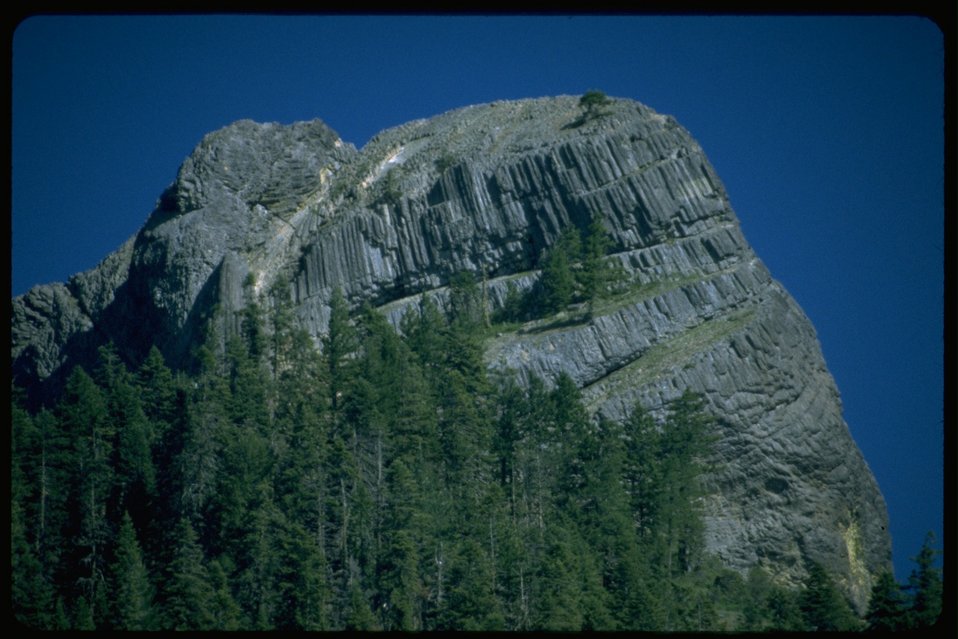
Pilot Rock Cascade-Siskiyou National Monument (SCNM).